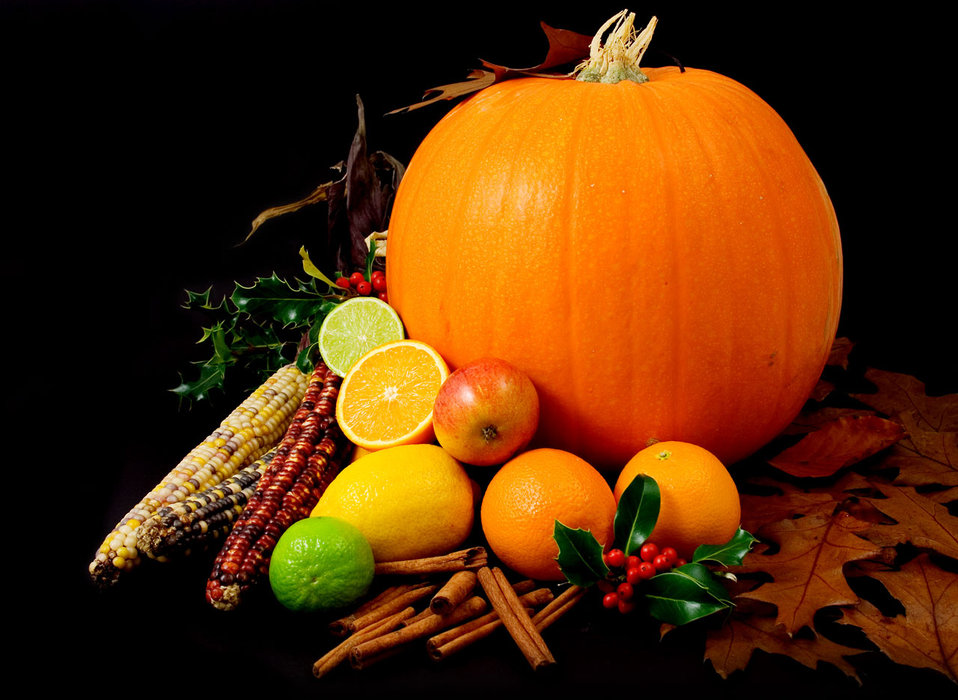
Pumpkin

A picture of a pumpkin and other various fruit on black background.